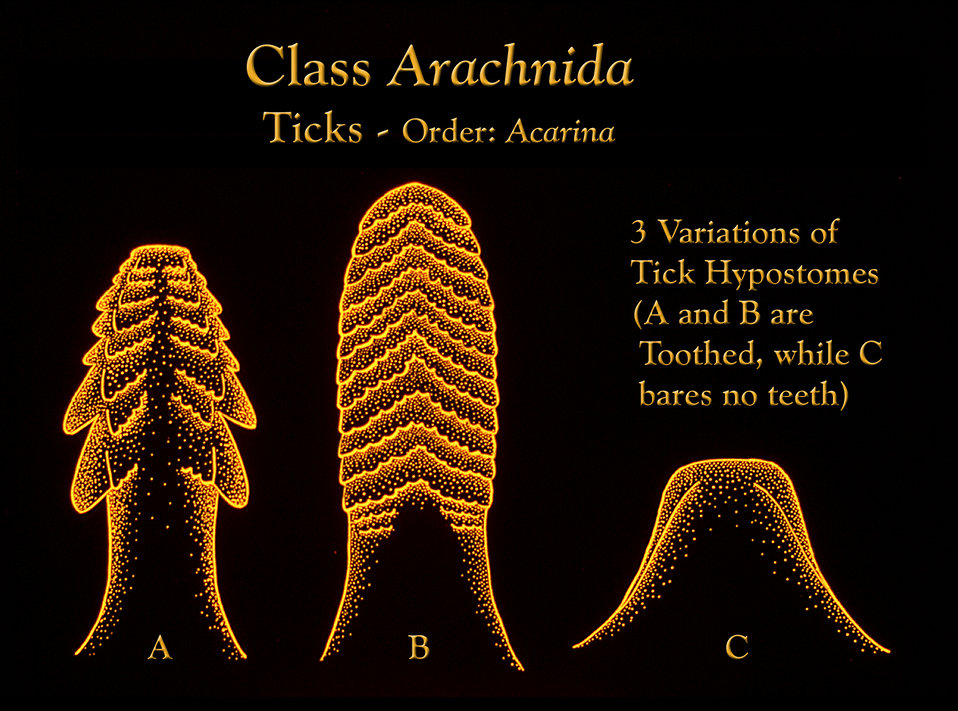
This illustration depicts three tick hypostomes, A and B are toothed, while C bares no teeth.